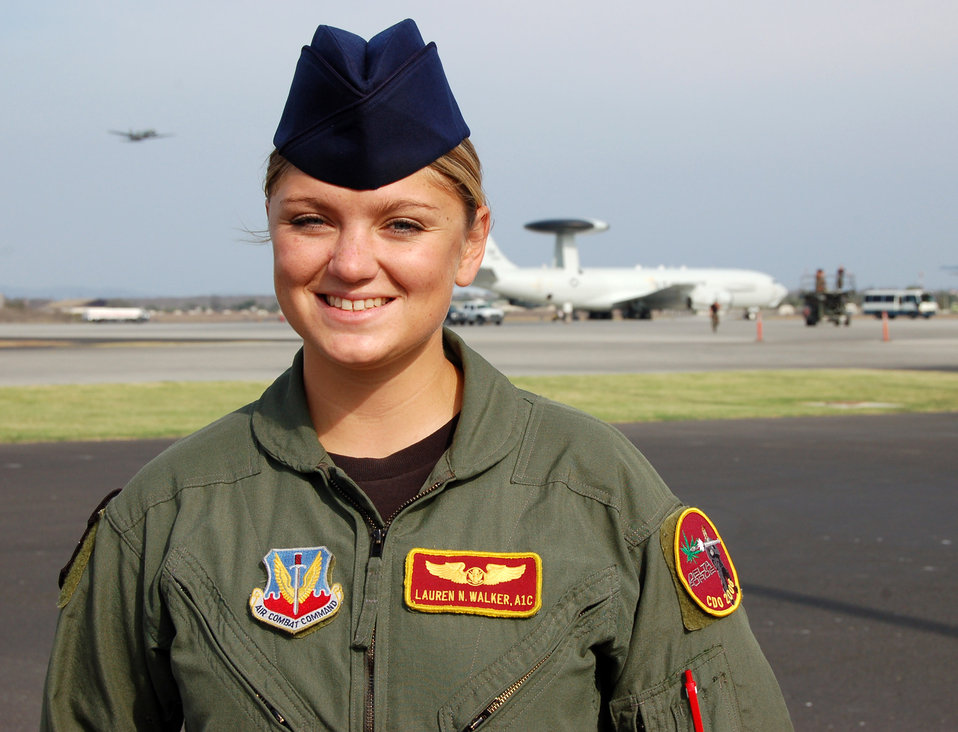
Chief McKinley says roll call good for Air Force

Airman 1st Class Lauren Walker is an airborne radar technician for the E-3 Sentry airborne warning and control aircraft (in background) at Manta Forward Operating Base in Ecuador. She and other Airmen at Manta met with Chief Master Sgt. of the Air Force Rodney J. McKinley during his visit to the joint inter-agency counterdrug mission hub.